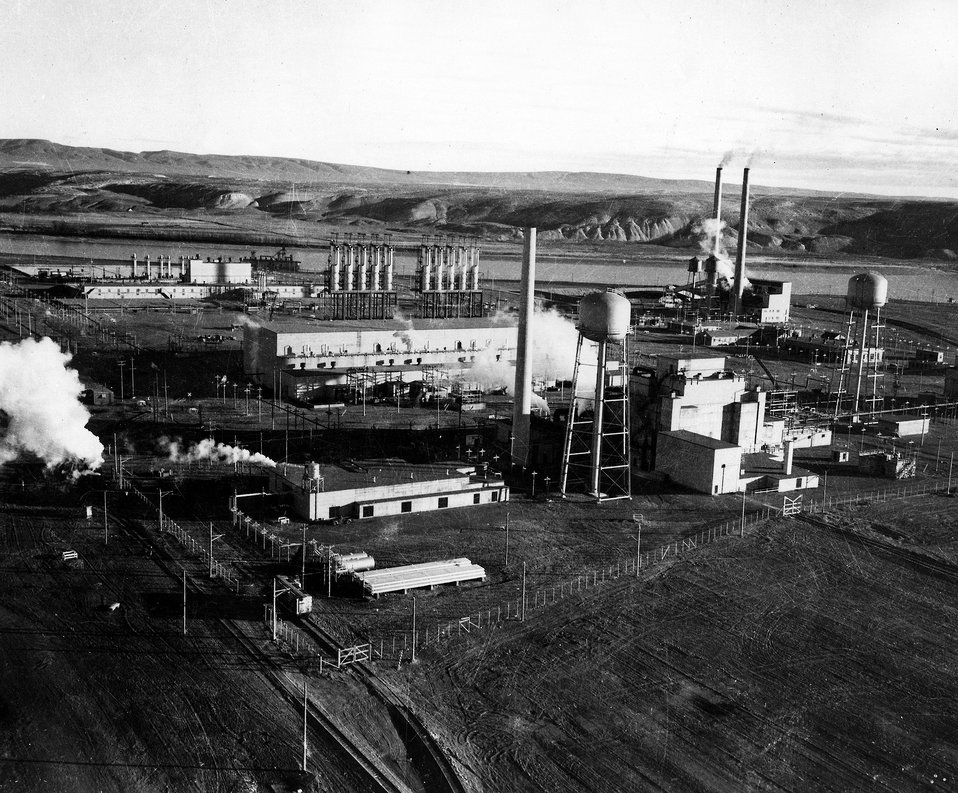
The Oak Ridge (Tenn.) Gaseous Diffusion Plant (above) which spreads over approximately 600 acres.